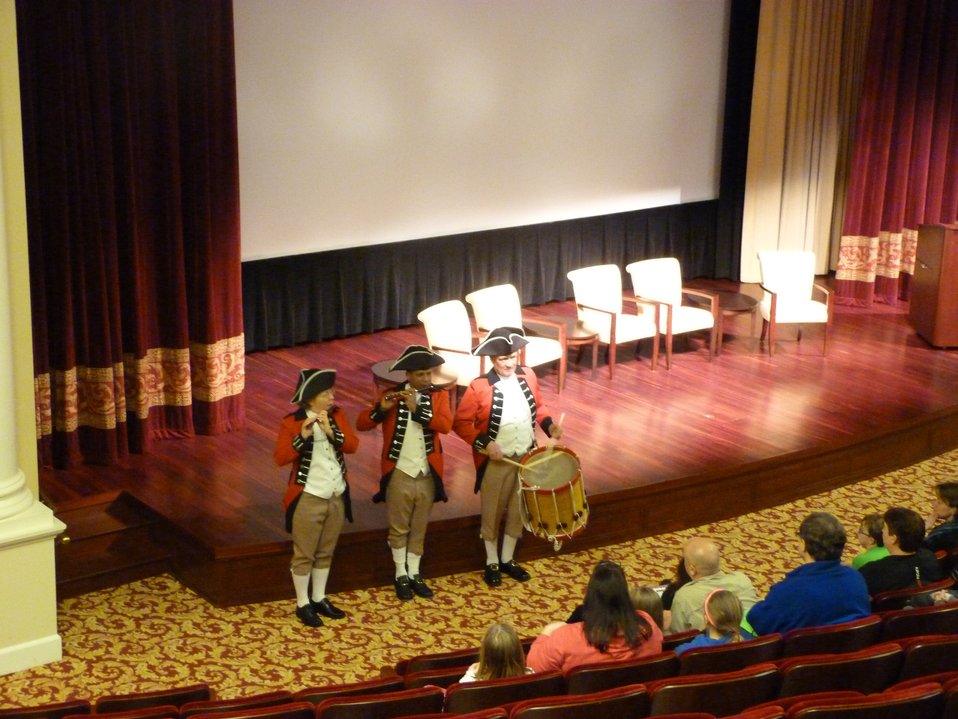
Rotunda Sleepover

Rotunda Sleepoverr; Photo provided by The Foundation for the National Archives